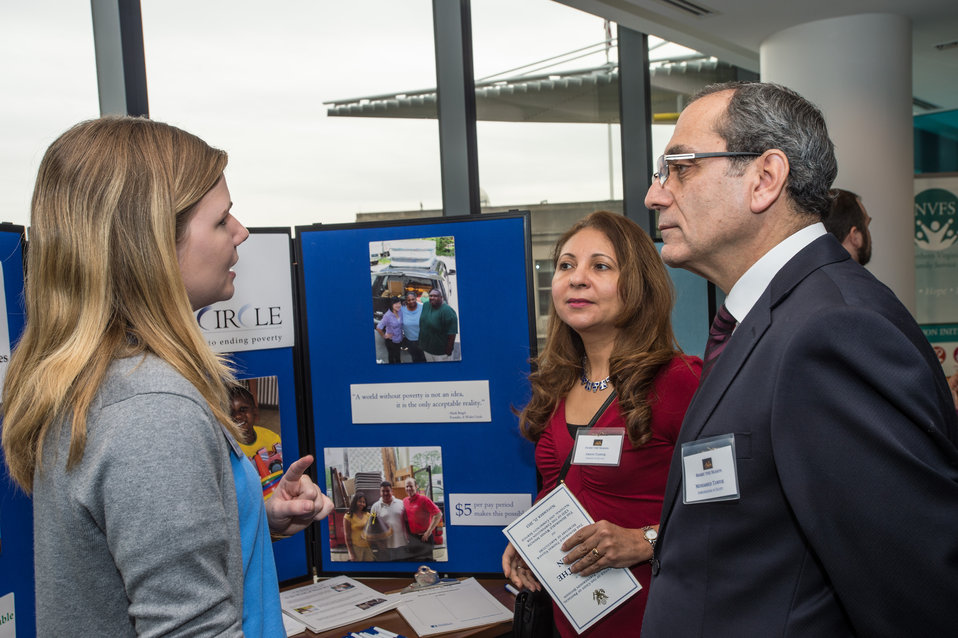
A Wider Circle Research and Communications Associate Director Erin Fiaschetti (left) speaks with Egyptian Ambassador Mohamed Tawfik (right-center), and Amani Tawfik at the Share the Season event organized by the U.S. Department of State Office of the Chief of Protocol Diplomatic Partnership Division at the Business Roundtable (BRT) in Washington, D.C. on Thursday, Nov. 21, 2013. BRT is a non-profit association of chief executive officers of leading U.S. companies that encourages embassies and diplomats to be active in local community service projects.